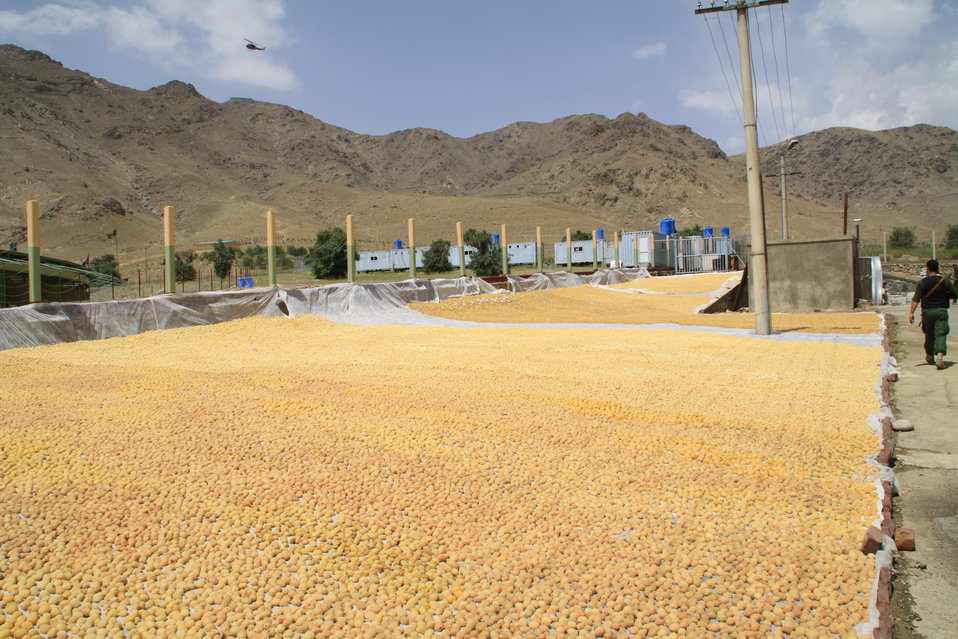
Badam Bagh Farm